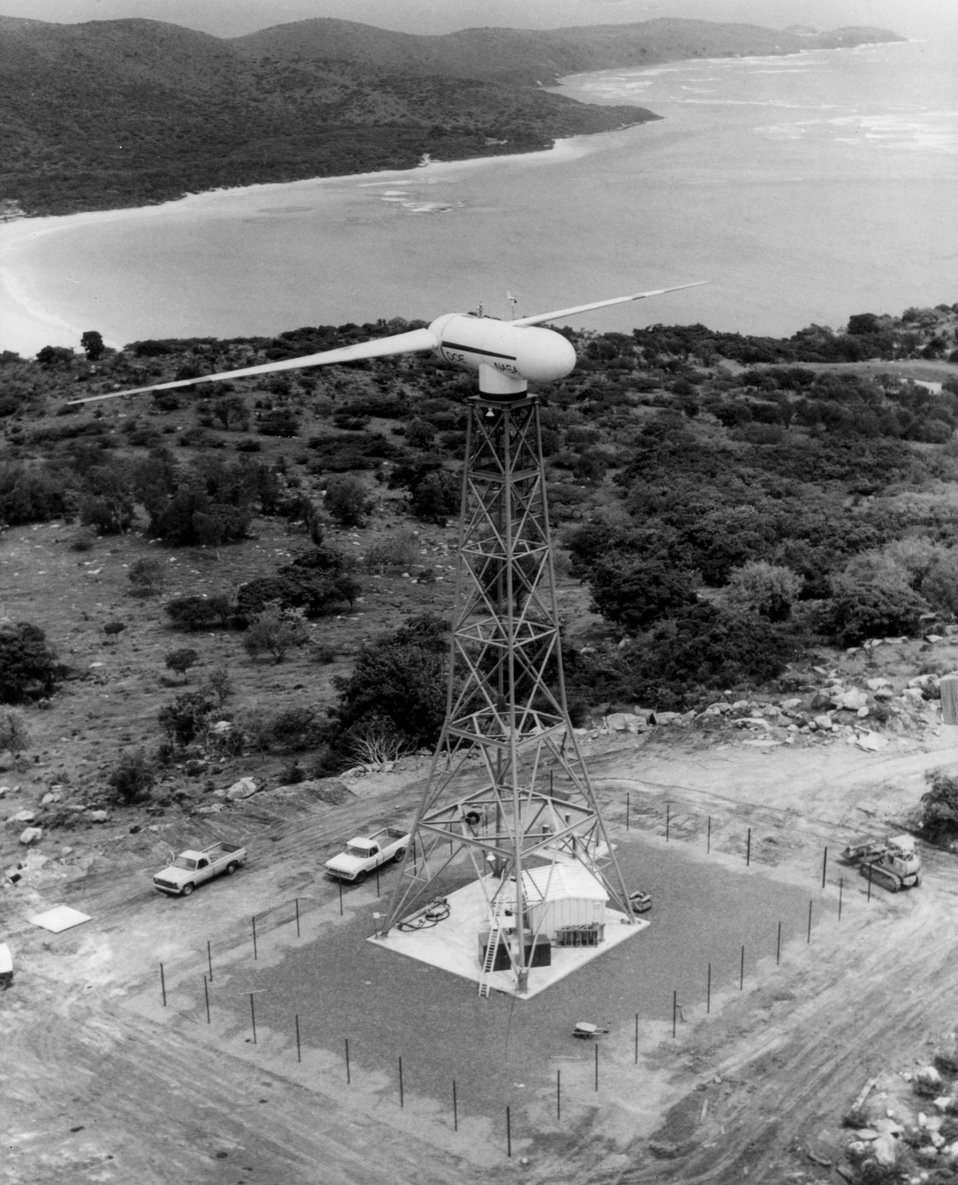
A large modern wind turbine generator is being field tested on Culebera Island, Puerto Rico for the Department of Energy and the National Aeronautics and Space Administration. c. 1978